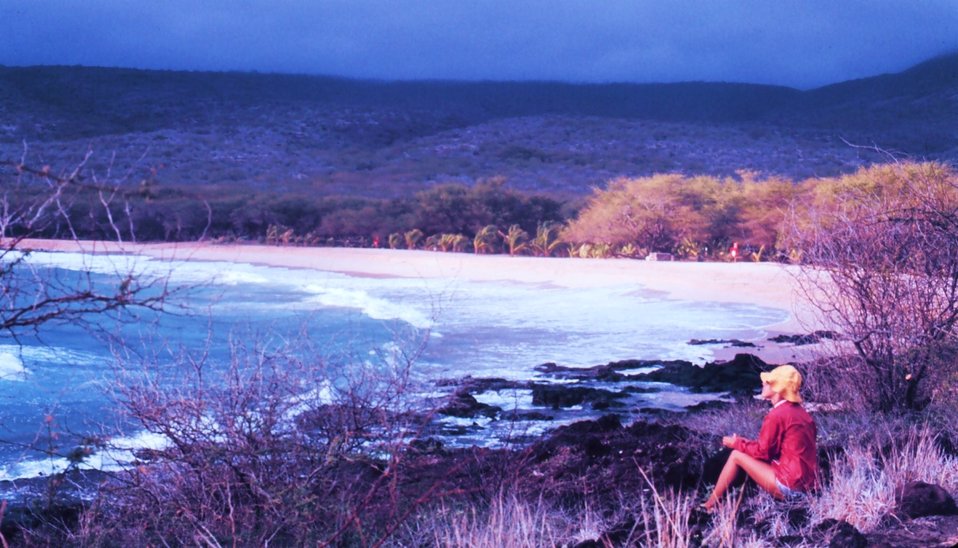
Lanai-Maui trip